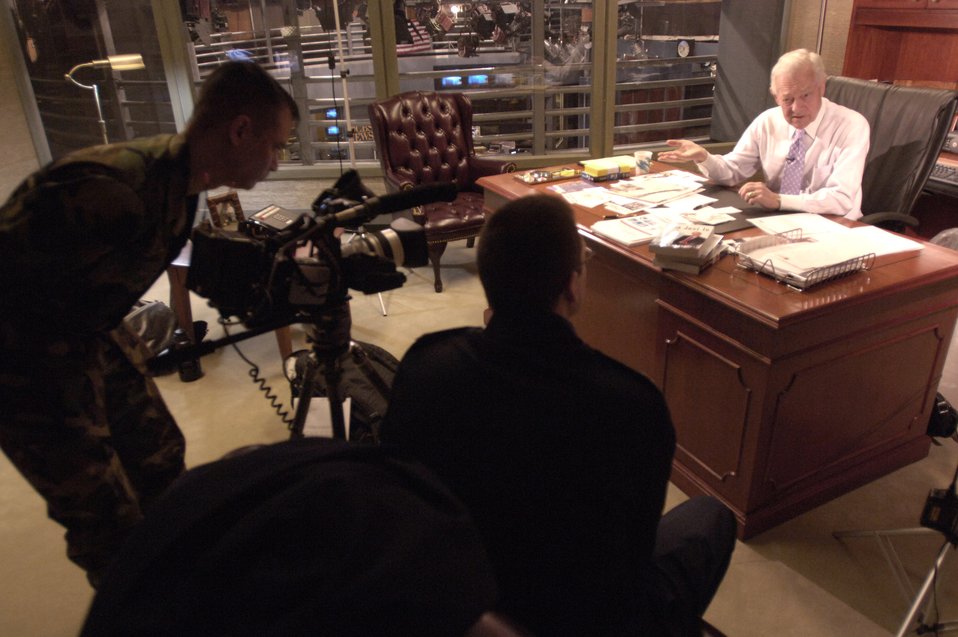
CBS news anchor proud of Air Force past

Bob Schieffer, chief Washington correspondent for